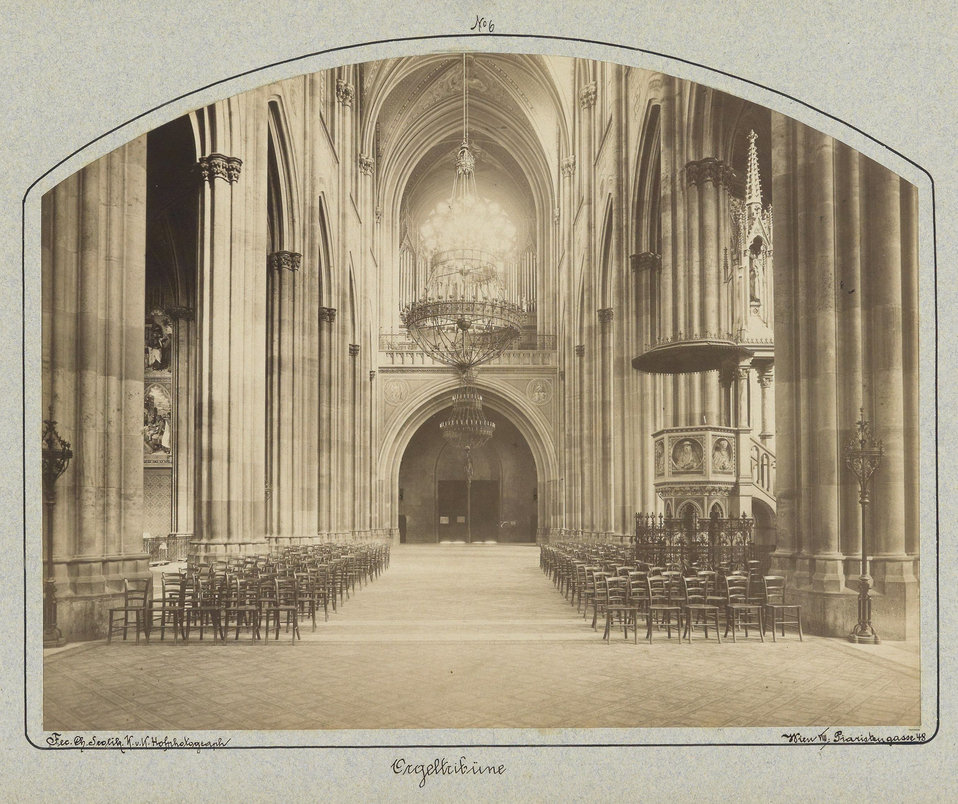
Deutsch: Votivkirche, Wien, 'Die Orgeltribüne'